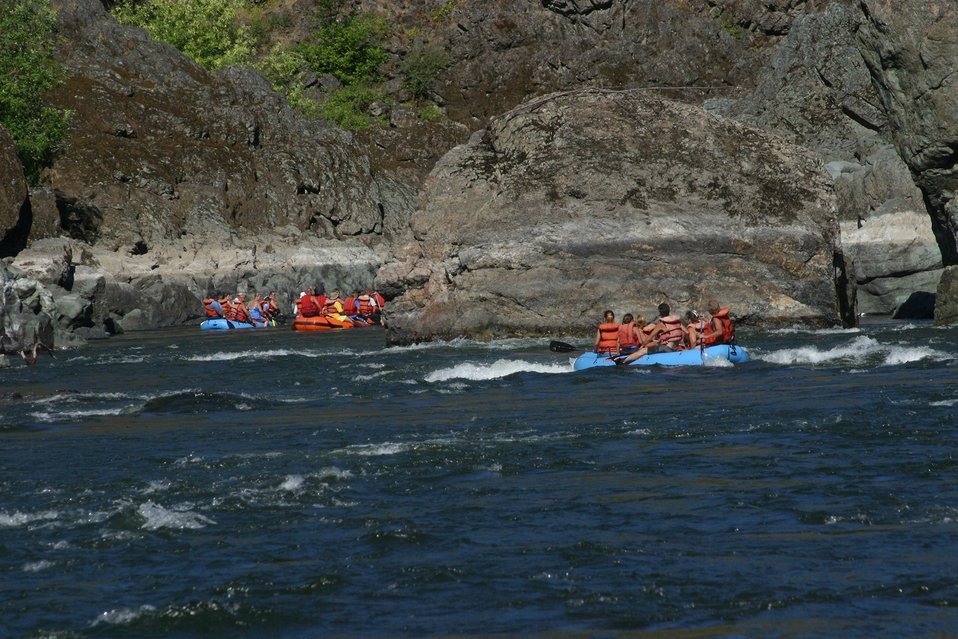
Boaters entering Hellgate Canyon.